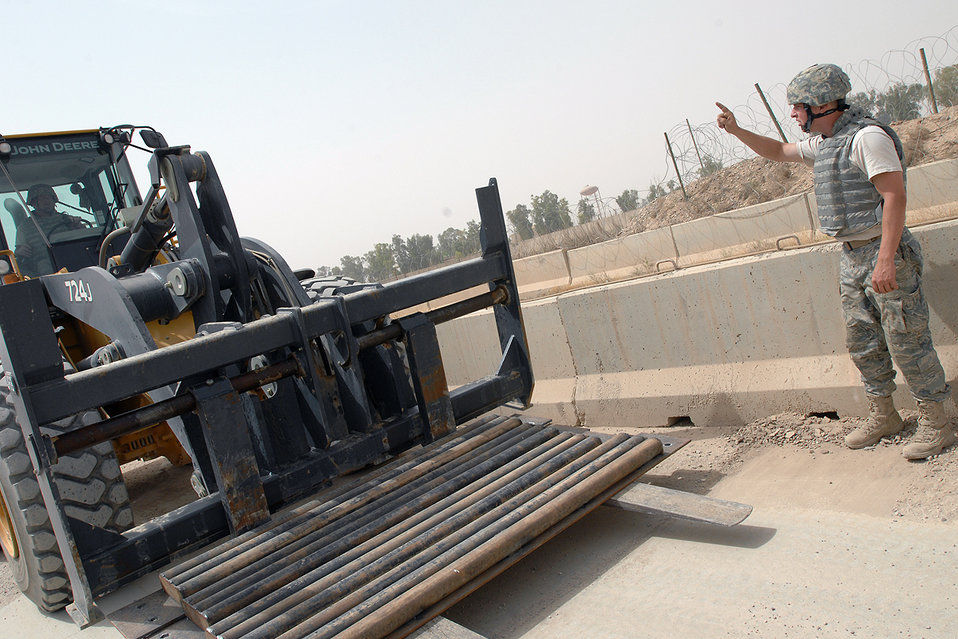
Airmen overcome bumps in road

Staff Sgt. Brent Sisson directs the placement of new speed bumps May 22 at Kirkuk Air Base, Iraq. The speed bumps are meant to not only control speed but also to increase the safety of the security-forces Airmen manning the gates. Sergeant Sisson is a 506th Expeditionary Civil Engineer Squadron heavy equipment operator. He is a native of Anchorage, Alaska, deployed from Elmendorf Air Force Base, Alaska.